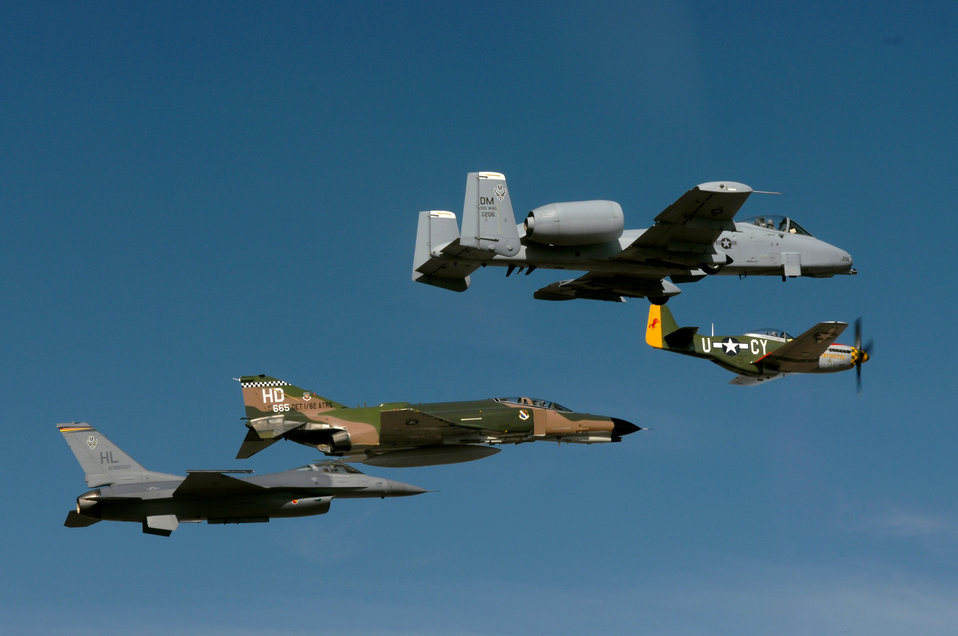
Planes of past and present soar over Sedona

An Air Force heritage flight consisting of a P-51 Mustang, an F-4 Phantom, an A-10 Thunderbolt and an F-16 Fighting Falcon fly over the Arizona desert on March 19 above Sadona. The flight was part of the events taking place in Phoenix for the first Air Force Week celebration of the year.